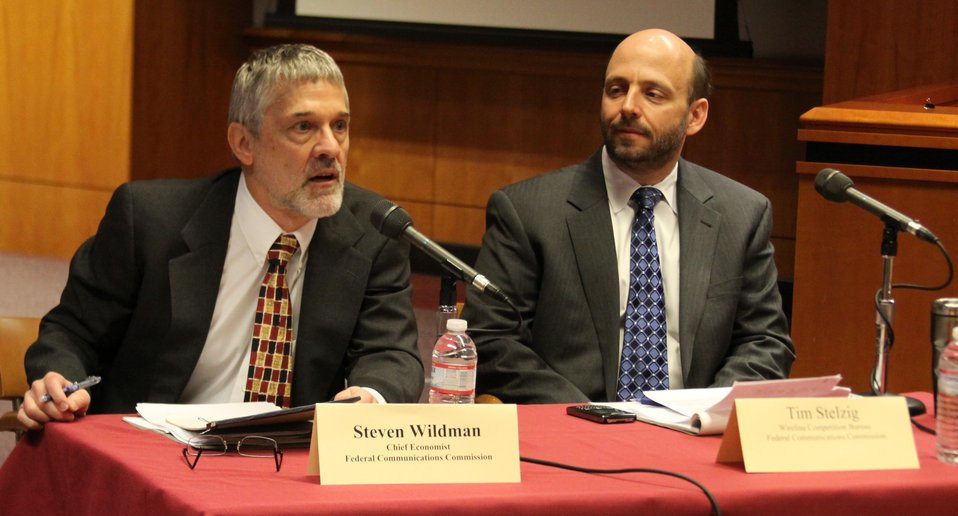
March 27, 2013 Gigabit City Challenge: Broadband Networks Workshop Panel 4: Leveraging Local Tools moderated by Steven Wildman, Chief Economist, FCC